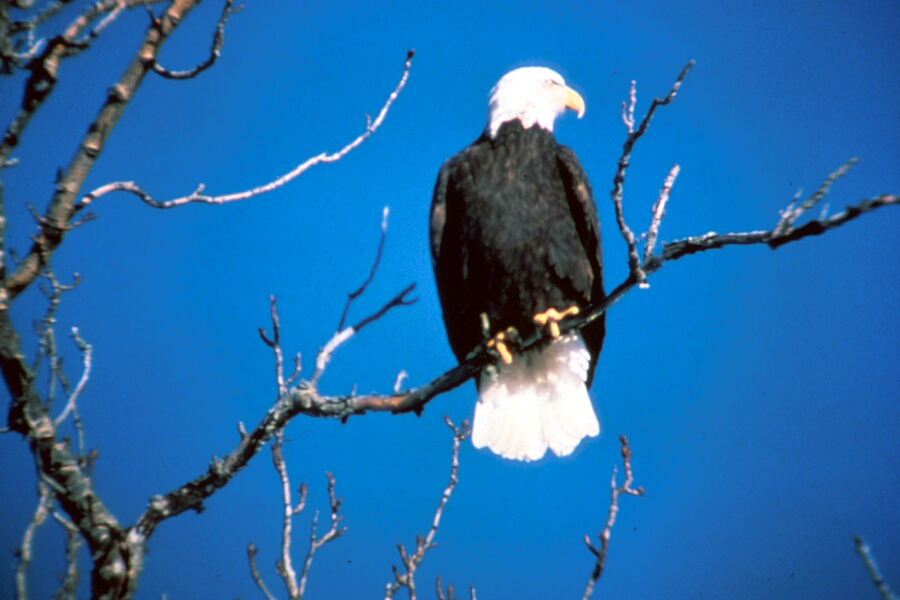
Bald eagle sitting on tree branch